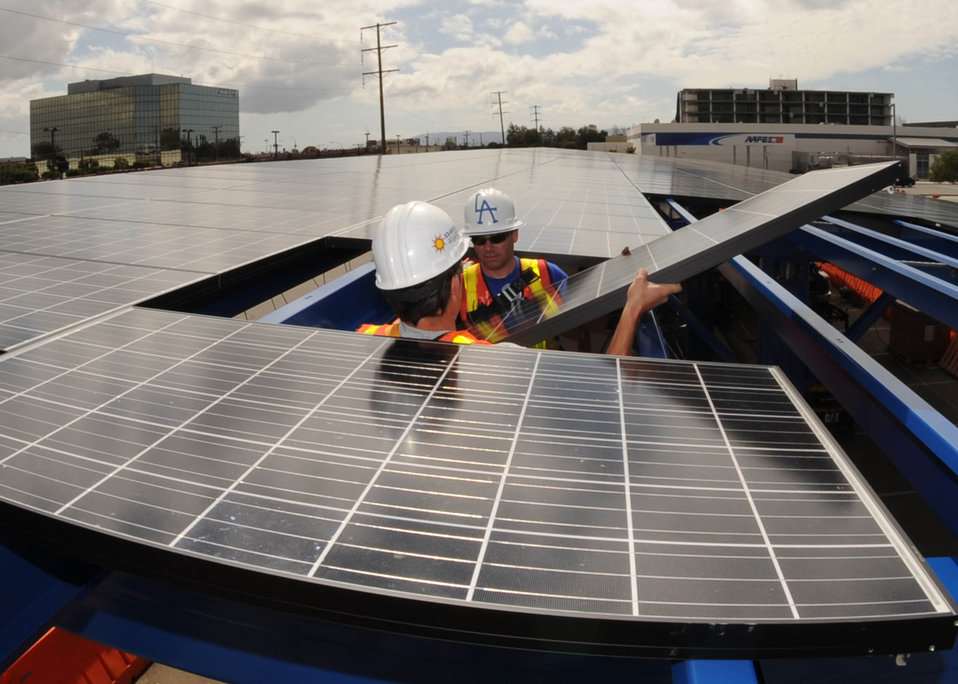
Solar energy

Work continues on the solar panels being installed on Los Angeles Air Force Base, Calif. When completed, the panels will decrease the amount of electricity the base purchases from the local power company. A similar project on the roof of the base commissary converts sunshine into about 290 kilowatt-hours of electricity each day, enough to power 10 typical households.